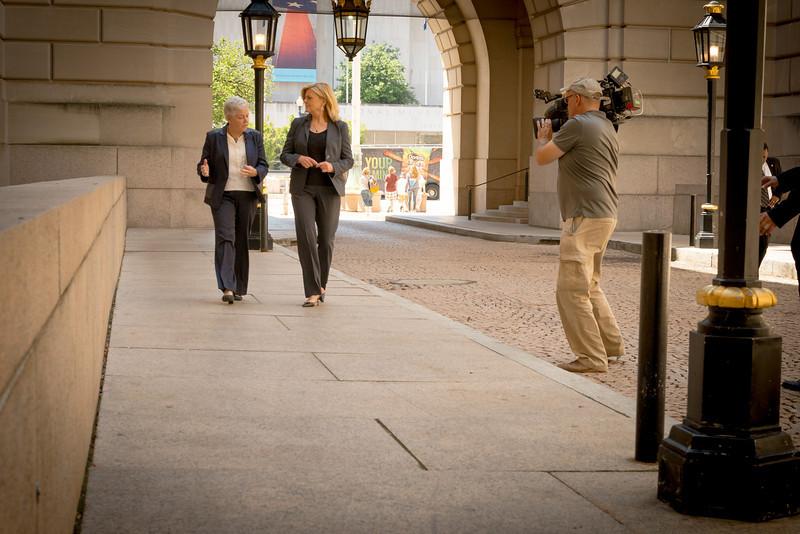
Day in the Life - June 2, 2014

11:46 am - There were huge amounts of interest surrounding EPA’s Clean Power Plan to reduce carbon pollution from existing power plants. Here, McCarthy talked with NBC’s Anne Thompson for a story that aired that evening on the network’s nightly news program. (9/15)